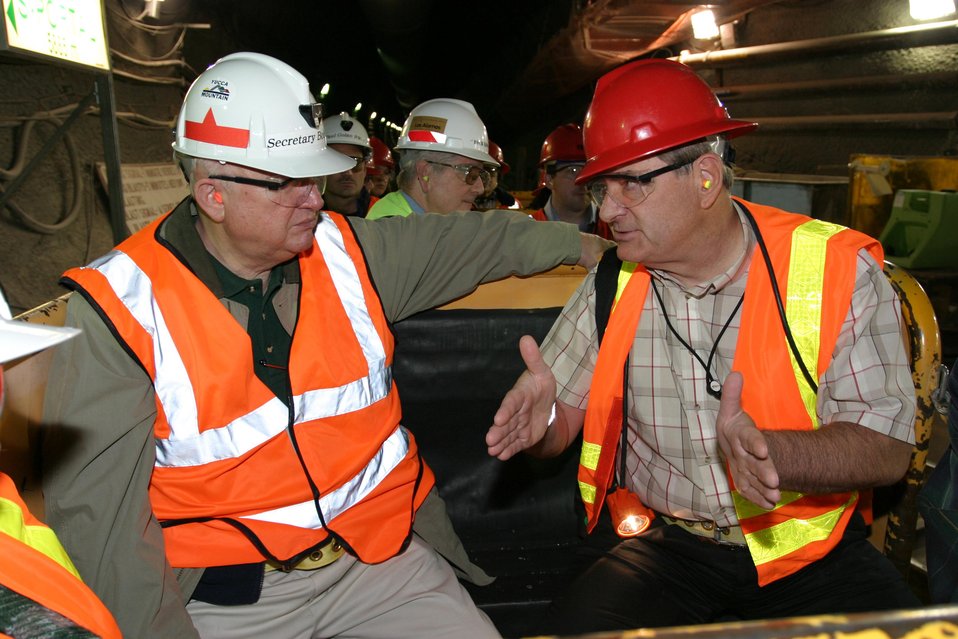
ENERGY SECRETARY SAMUEL BODMAN AND MIKE VOEGELE DURING A VISIT TO YUCCA MOUNTAIN ON APRIL 13, 2006.

YUCCA MOUNTAIN IS LOCATED ON THE SOUTHWEST BOUNDARY OF THE NEVADA TEST SITE. IN 2002, IT WAS RECOMMENDED AS THE NATION'S FIRST LONG TERM GEOLOGICAL REPOSITORY FOR HIGH LEVEL NUCLEAR WASTE. STUDIES OF THE SITE INCLUDE: SURFACE BASED TESTING OF ROCK, SOIL SAMPLES AND WATER MOVEMENT, SUBSURFACE ROCK TESTING AT DEEP LEVELS AND LABORATORY ANALYSIS OF SAMPLES.